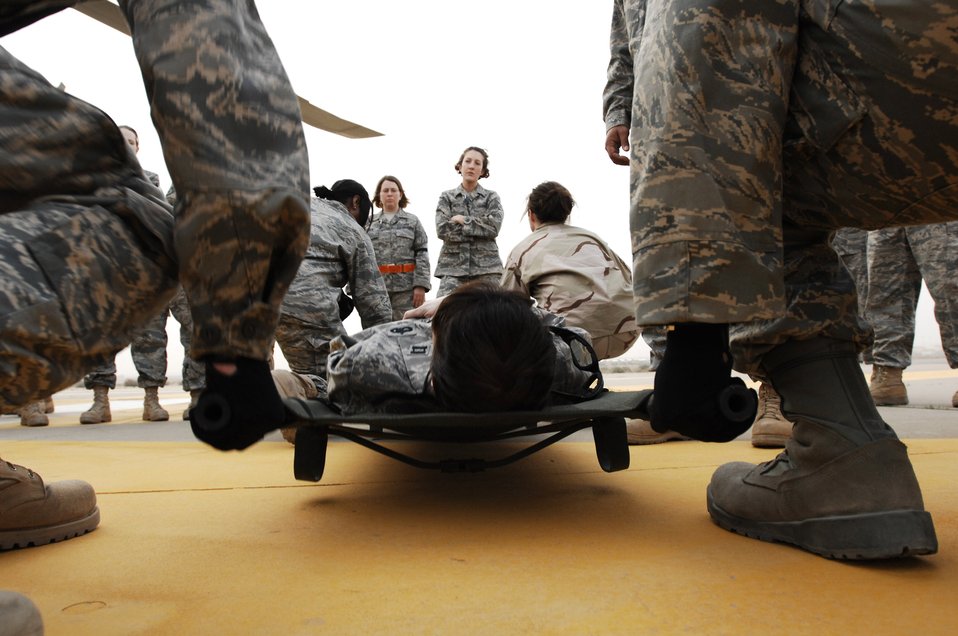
Litter training key to patient handling

Airmen from the 386th Expeditionary Medical Group prepare to lift Capt. Loree Lunsford during litter management system training Feb. 18 at a Southwest Asia air base. The training familiarized medics on the loading and extracting techniques of patients for medical evacuation missions in support of operations Enduring Freedom and Iraqi Freedom. Captain Lunsford is a nurse from the 386th EMDG.